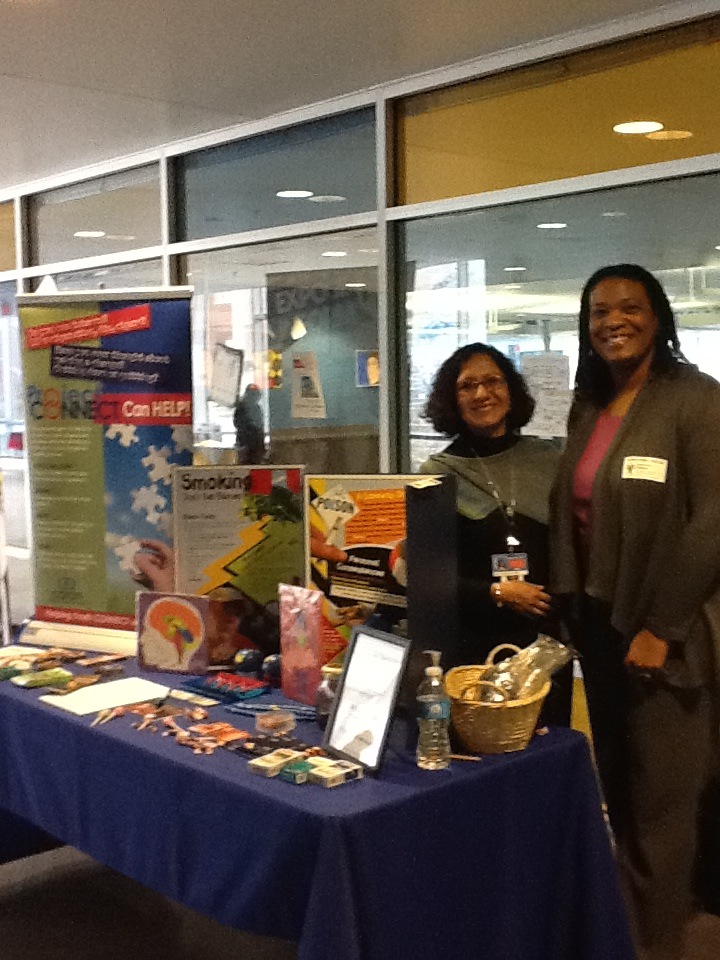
CONNECT, NDFW 2013

Arlington, Va. Gretchen Williams from Project CONNECT and Mila Vascones-Gatski.